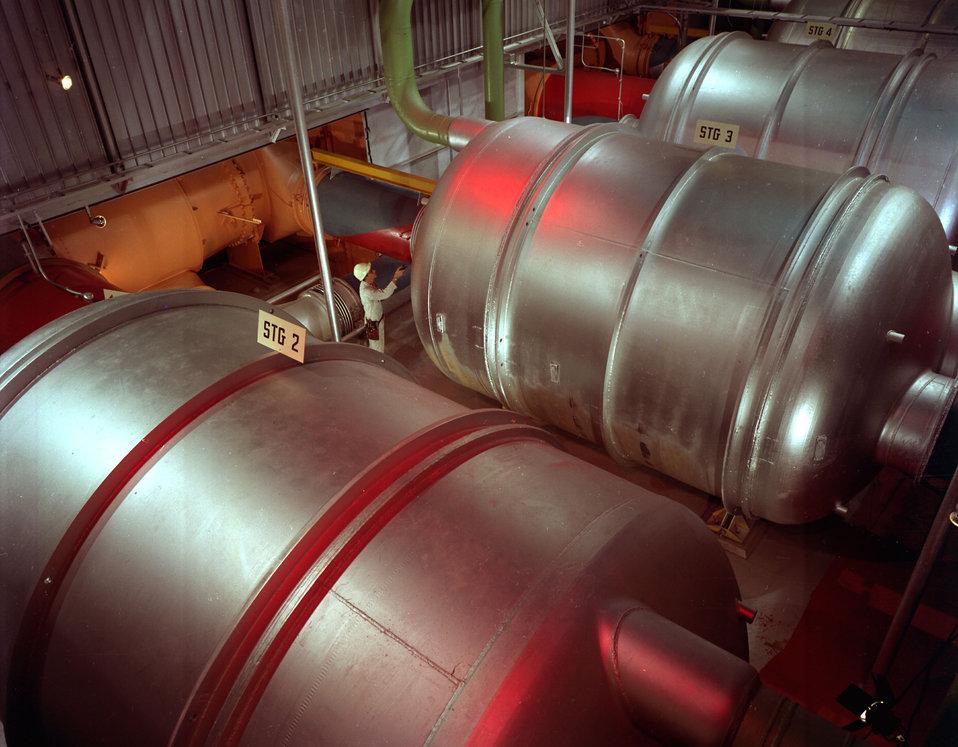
K-33 interior K-25 Plant Oak Ridge

72-0018 DOE photo by Frank Hoffman

K-33 interior K-25 Plant Oak Ridge Tennessee 1-11-1972